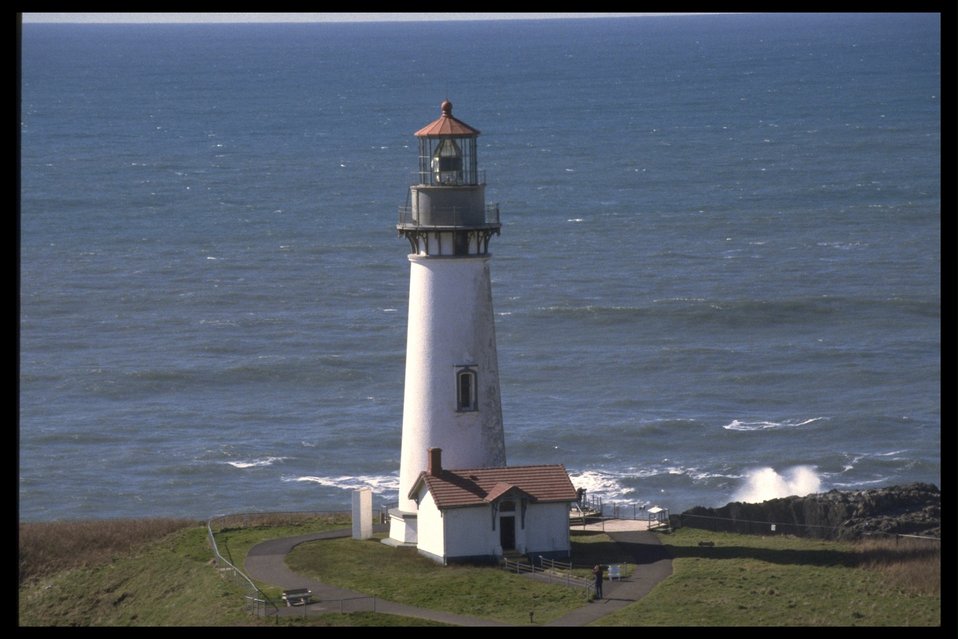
Yaquina Head Lighthouse.